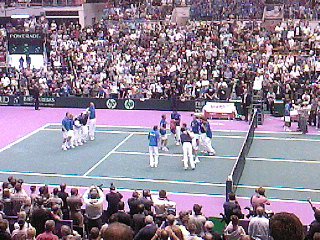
2010 Davis Cup semi-final France vs Argentina. After the doubles match, French team celebrates its 3-0 victory.